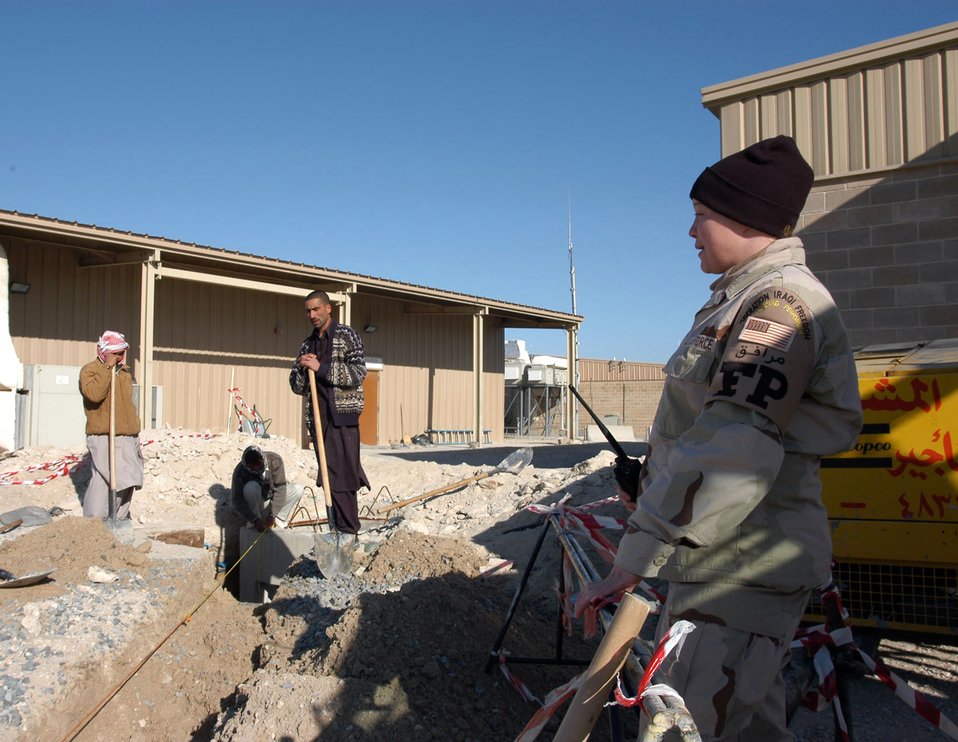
'Good thing' when nothing happens

SOUTHWEST ASIA -- Airman 1st Class Christina Colvin watches third-country workers at a construction project at a forward-deployed location. The force protection flight Airmen help ensure the safety of the base by escorting more than 2,300 workers who transit the base weekly. Airman Colvin is assigned to the 386th Expeditionary Security Forces Squadron force protection flight.